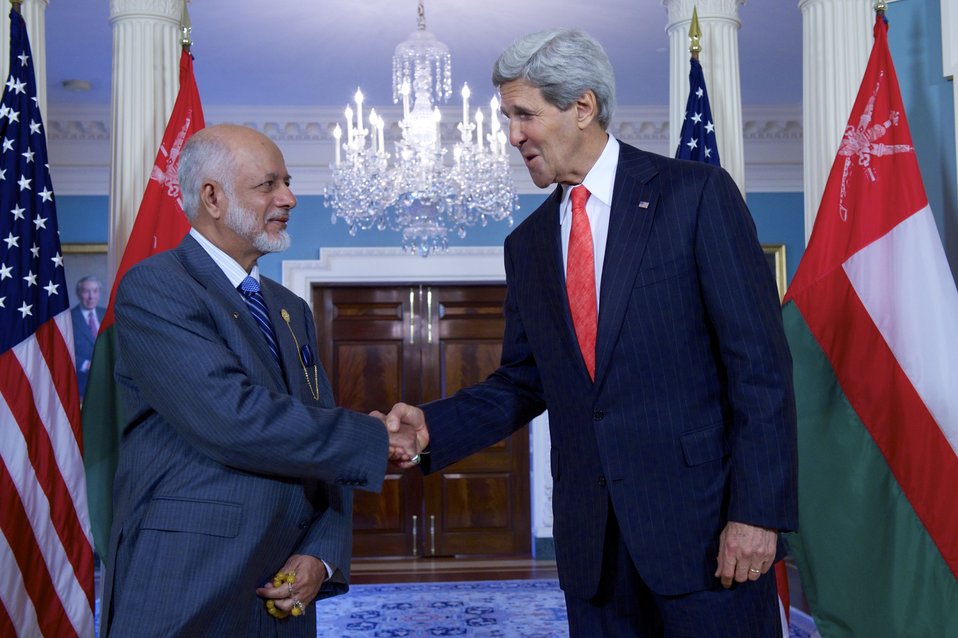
Secretary Kerry Shakes Hands With Omani Foreign Minister Yusuf bin Alawi bin Abdullah

U.S. Secretary of State John Kerry shakes hands with Omani Foreign Minister Yusuf bin Alawi bin Abdullah after they addressed reporters at the U.S. Department of State in Washington, D.C., on June 20, 2014.